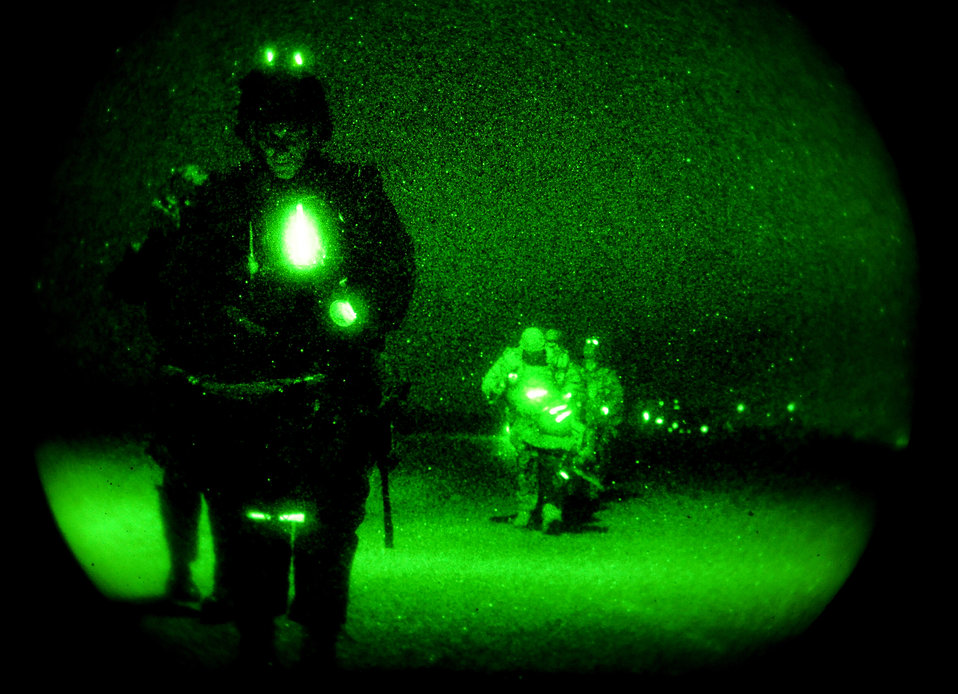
Special Tactics Airmen jump at night

Airmen from the U.S. Air Force Special Tactics Training Squadron are on the ground after a high altitude, low opening or HALO, mission near Fort Walton Beach, Fla., March 16, 2010, during Exercise Emerald Warrior 2010. U.S. military servicemembers participated in the 19-day joint training exercise,, which provided participants realistic urban-warfare training scenarios at multiple sites along Florida's Gulf Coast.